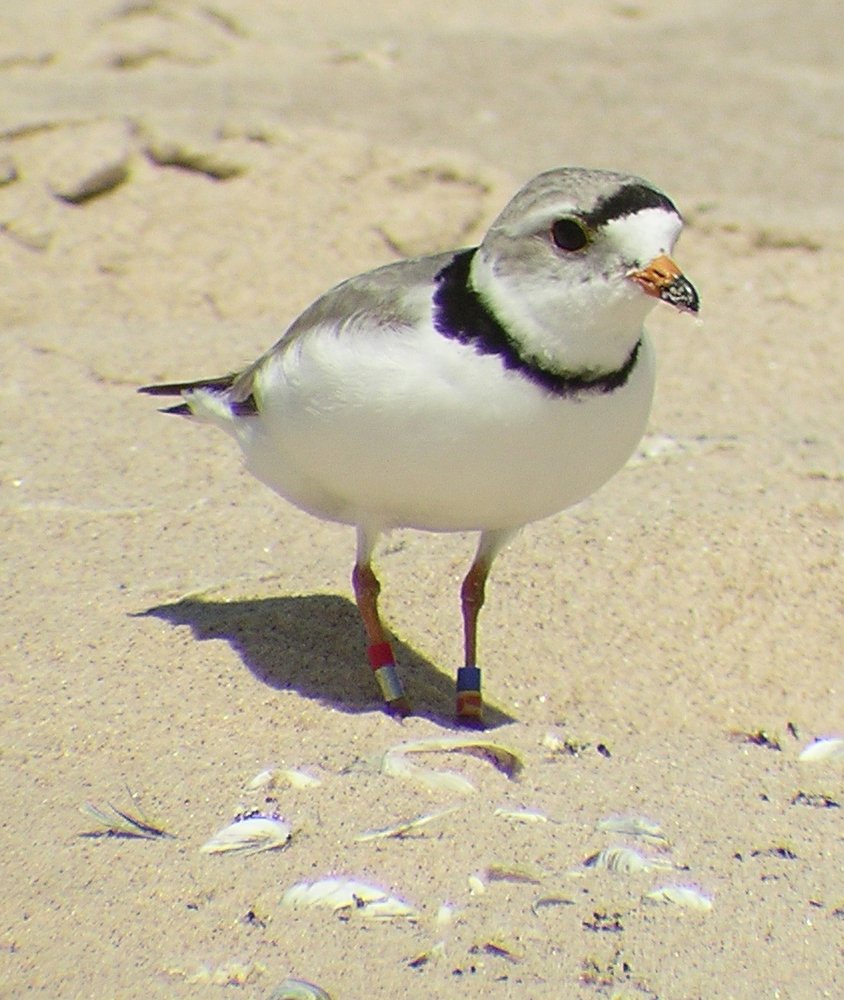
Piping clover with bands on both legs